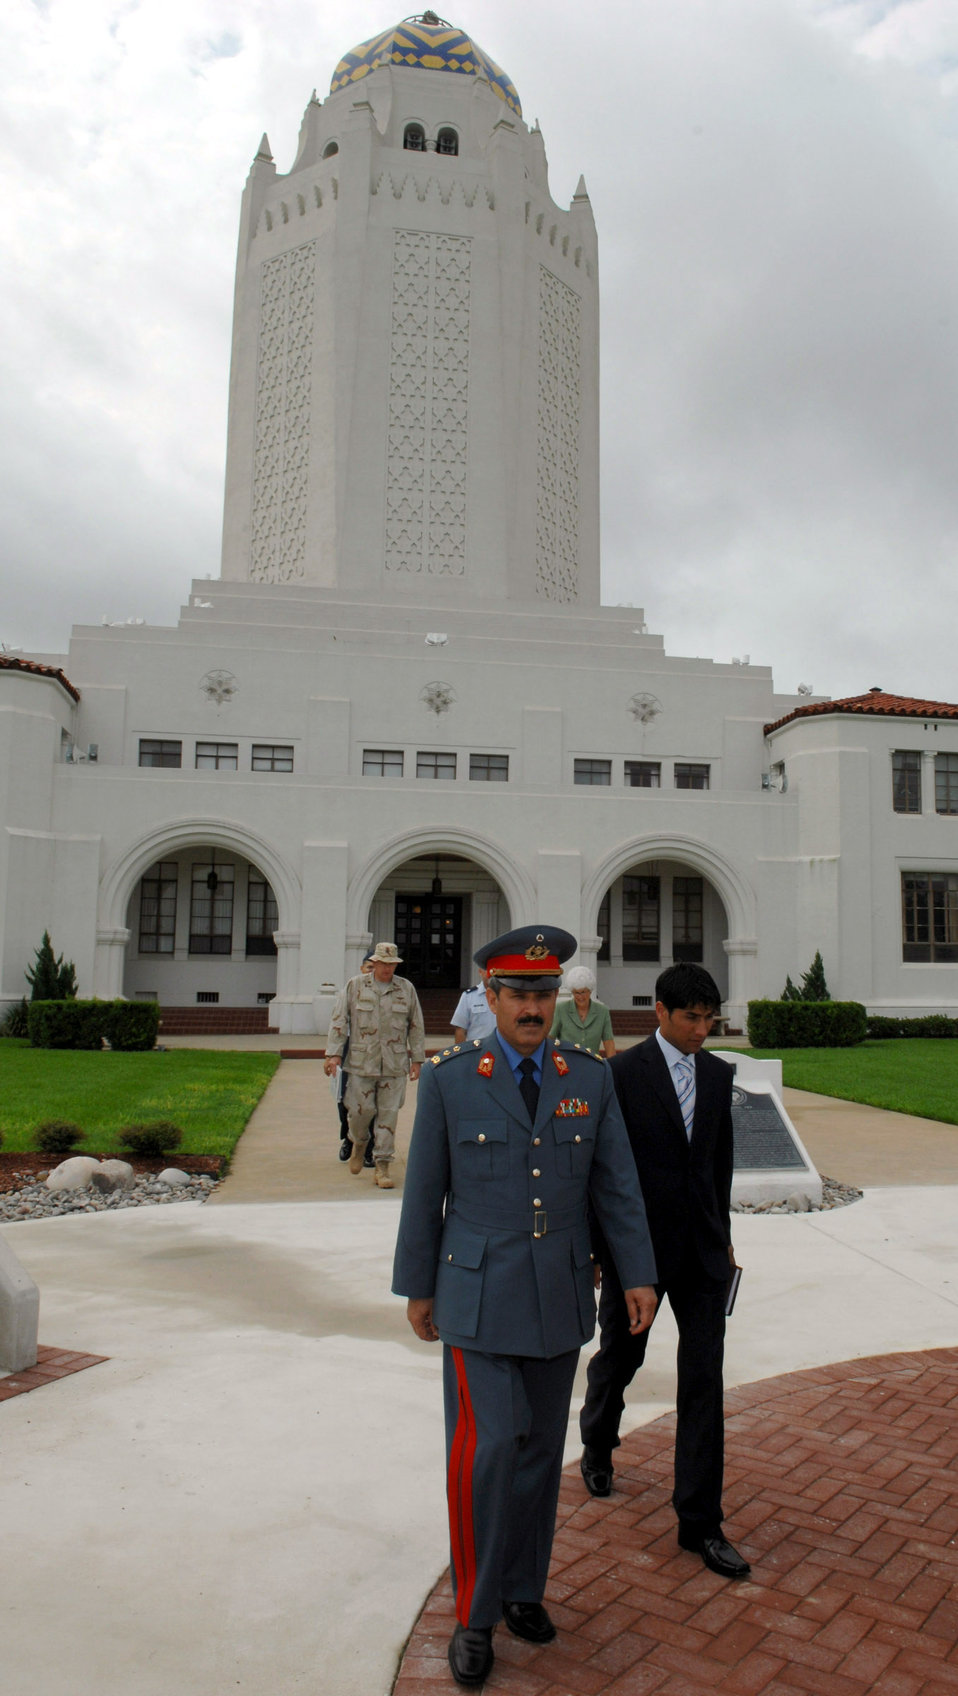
Afghan military leader visits Randolph

Afghan Maj. Gen. Mohammad Dawran leaves the Taj Mahal during a July 9 tour of Randolph Air Force Base, Texas. General Dawran, the commander of the Afghanistan National Army Air Corps, visited Randolph AFB and other Air Education and Training Command bases to see a Western example of military training.